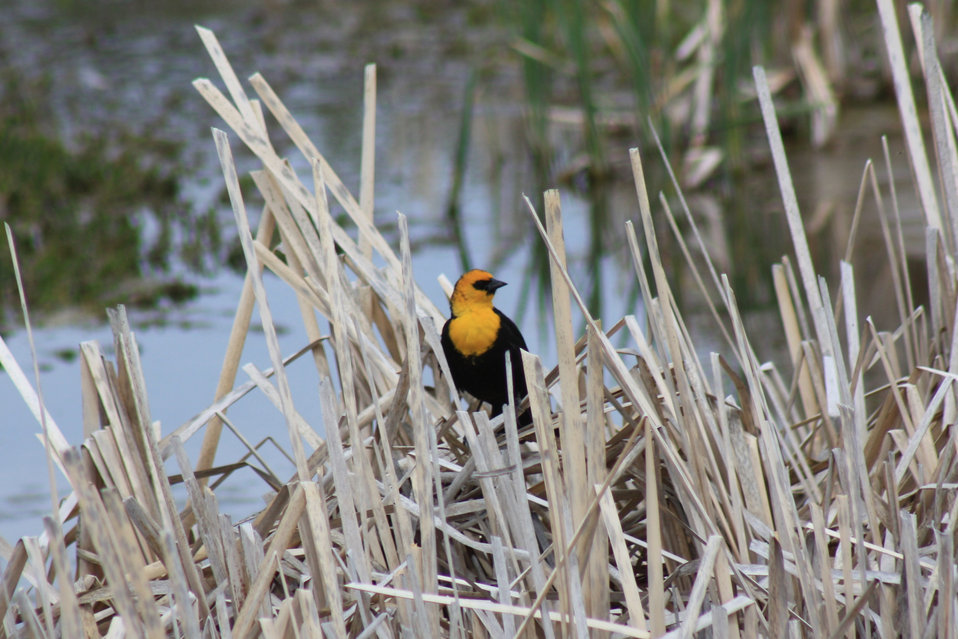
A Striking Color Combination

It's very common to spot Yellow-headed Blackbirds behind the visitor center at the National Elk Refuge. Look for them in western and prairie wetlands, where they nest in reeds directly over the water.

Credit: USFWS / Ann Hough, National Elk Refuge volunteer

Cool fact provided by the Cornell Lab of Ornithology: In 1825, Charles Lucien Bonaparte, nephew of Napoleon Bonaparte, gave the first detailed description of the Yellow-headed Blackbird, which was collected in 1820 by Thomas Say and Sir John Richardson.